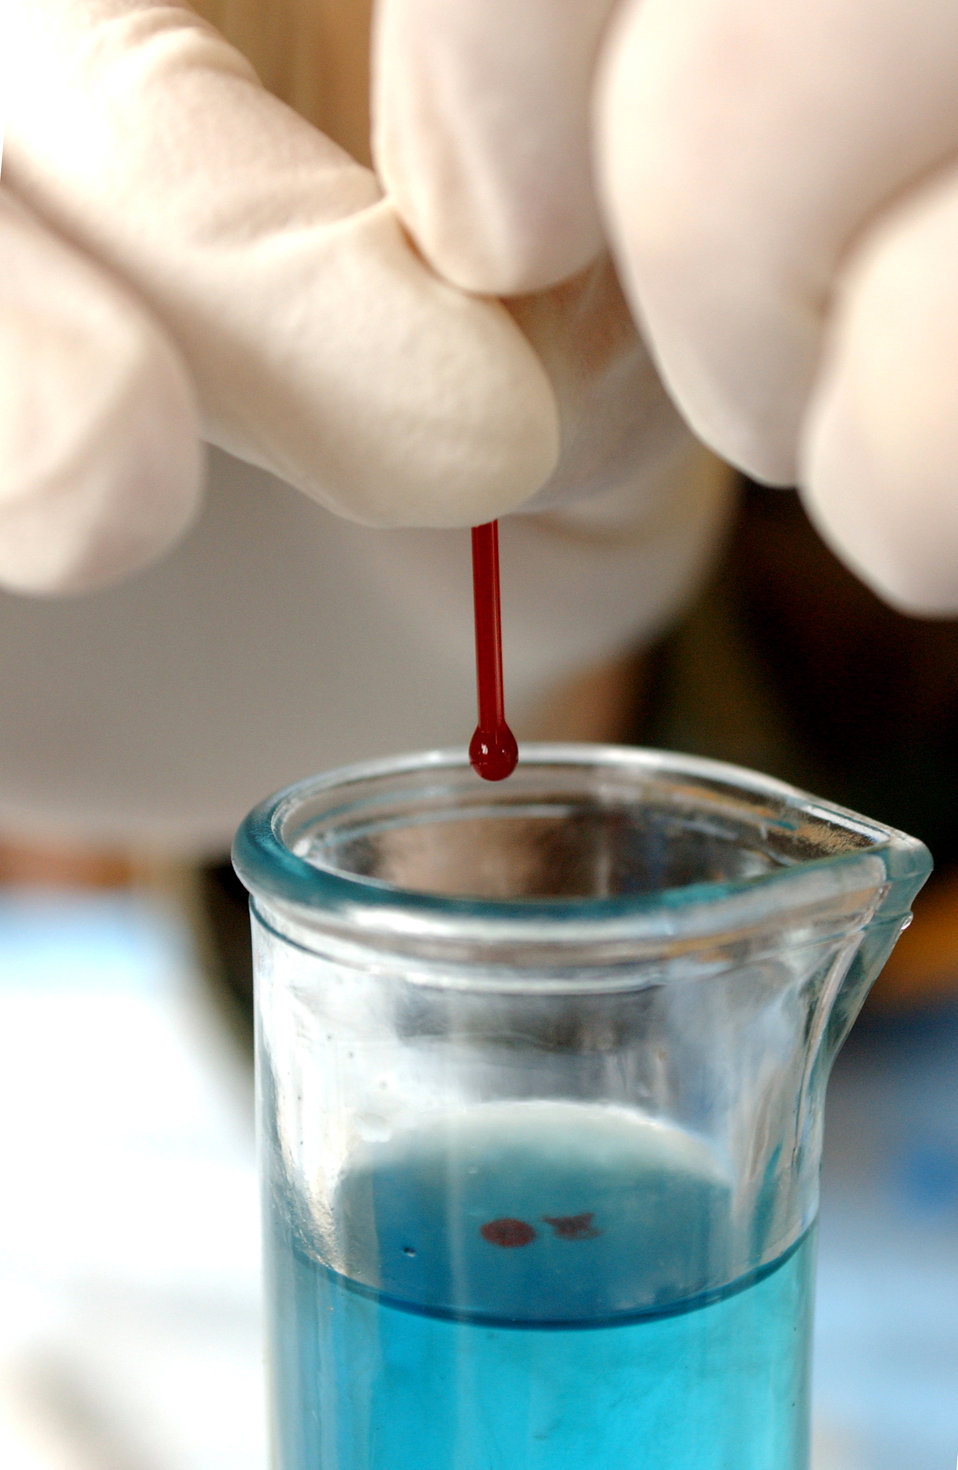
It's a bloody job...

ROYAL AIR FORCE MILDENHALL, England -- Airman 1st Class Stephanie Ambler squeezes blood into a glass cylinder of copper sulfate solution to test for iron levels during a blood drive here April 13. If blood does not drop to the bottom of the cylinder within 15 seconds, it indicates the donor has an iron deficiency and cannot donate. Airman Ambler is assigned to the 48th Medical Support Squadron.